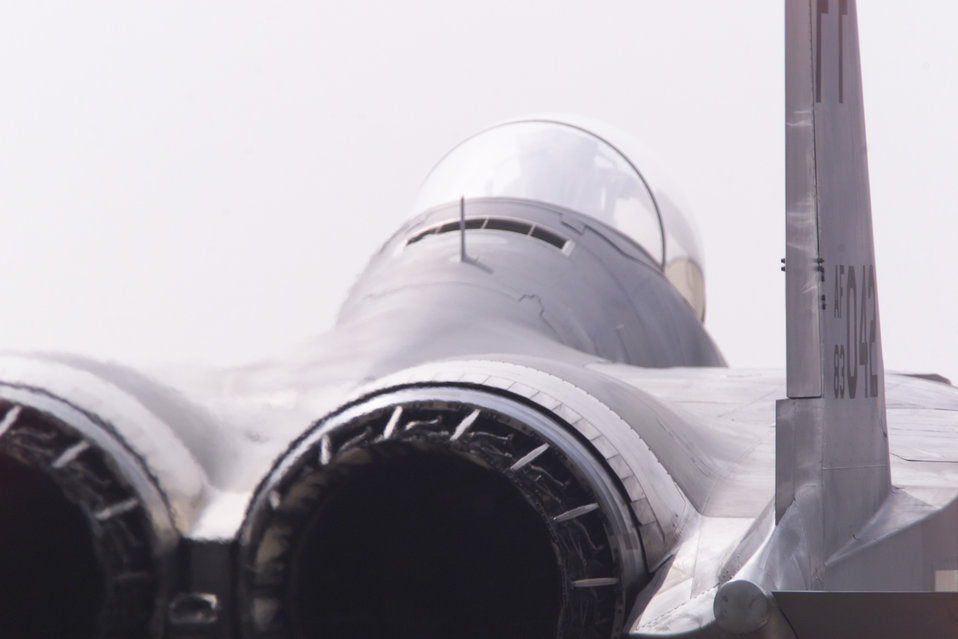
East Coast Demonstration Team

FILE PHOTO -- The contoured lines and contrast between highly polished metal and gray painted aircraft panels are clearly visible in this rear view of an F-15C Eagle of the East Coast Demonstration Team. The 2001 F-15 East Coast Demonstration Team visited Shaw Air Force Base, S.C., to have their airshow routine reviewed and approved by Lt. Gen. Chuck Wald prior to the beginning of the 2001 airshow season.